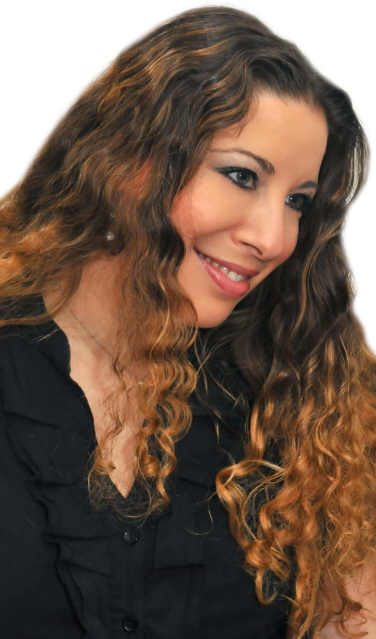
idit shechtman